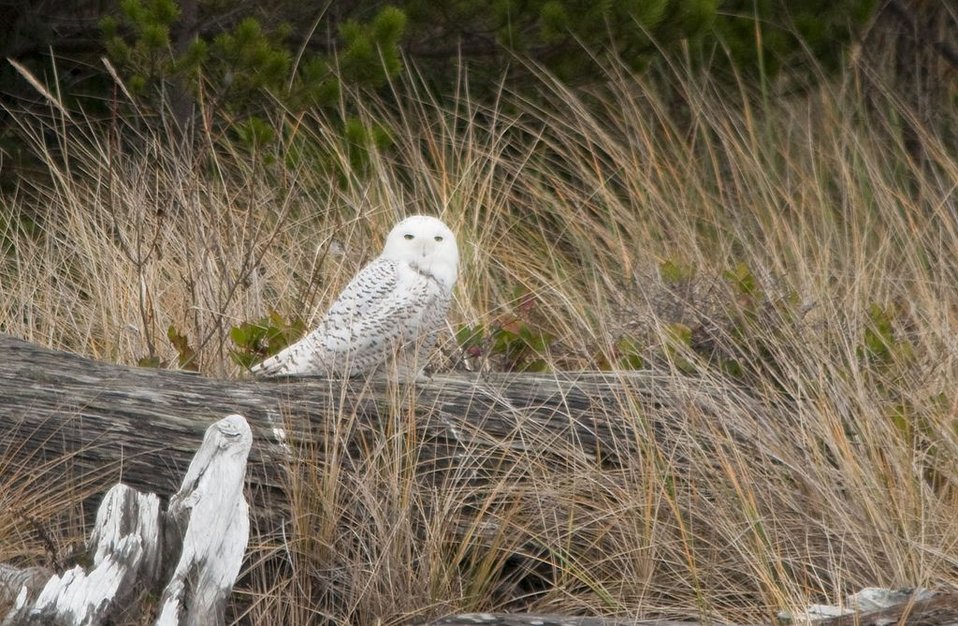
Siletz Bay Refuge

Siletz Bay National Wildlife Refuge, OR.